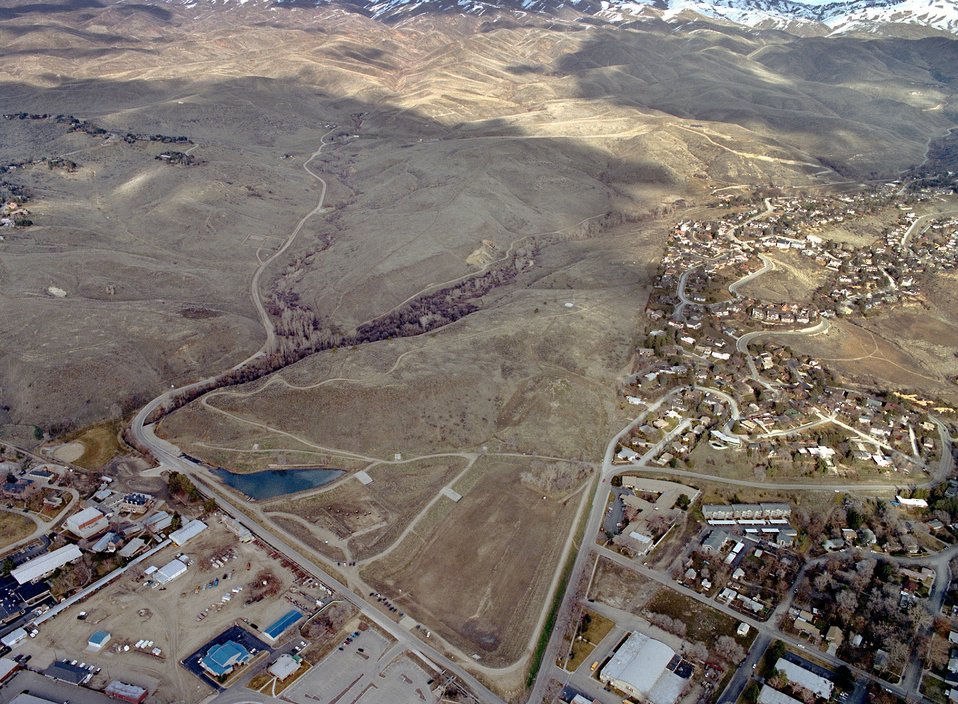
Recreation on the Boise Front Foothills Aerial Camels Back Park Four Rivers Field Office LSRD Lower Snake River District